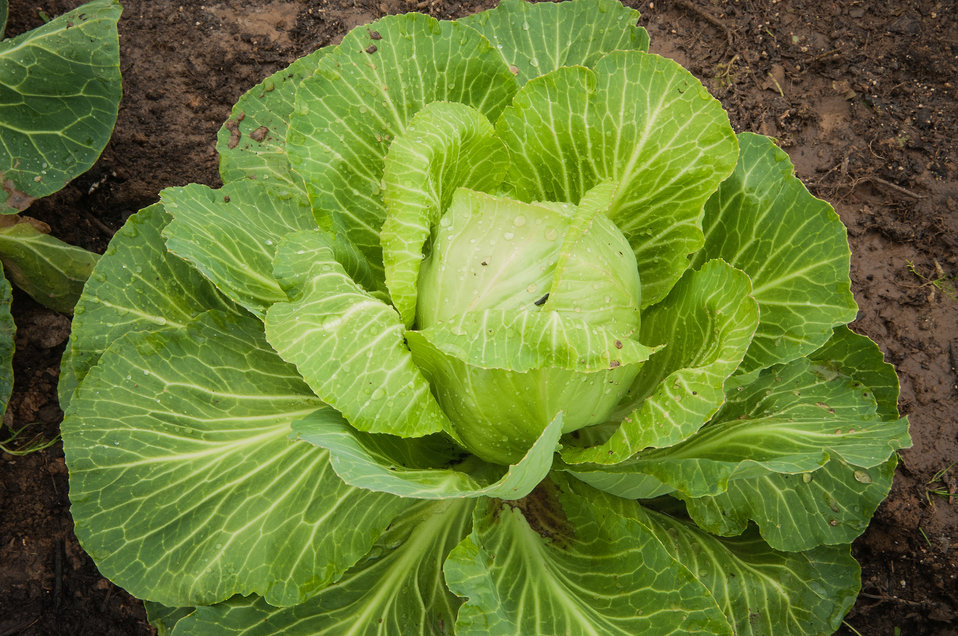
Cabbage, one of the most nutrient dense vegetables, grows in a high tunnel house at the East Arkansas Enterprise Community, (EAEC) Inc. in Forrest City, AR on Mar. 4, 2013. The EAEC is one of 42 community-based organizations located in high poverty areas in the U.S. to benefit from the Arkansas Delta Seeds of Change (ADSOC) Initiative. The U.S. Department of Agriculture (USDA) in partnership with Heifer International (an International organization whose mission is to work with communities to end hunger and poverty and care for the Earth) and various for-profit and non-profit organizations have organized the Seeds of Change Implementation Plan to use sustainable agriculture to build food systems in the Arkansas Delta.